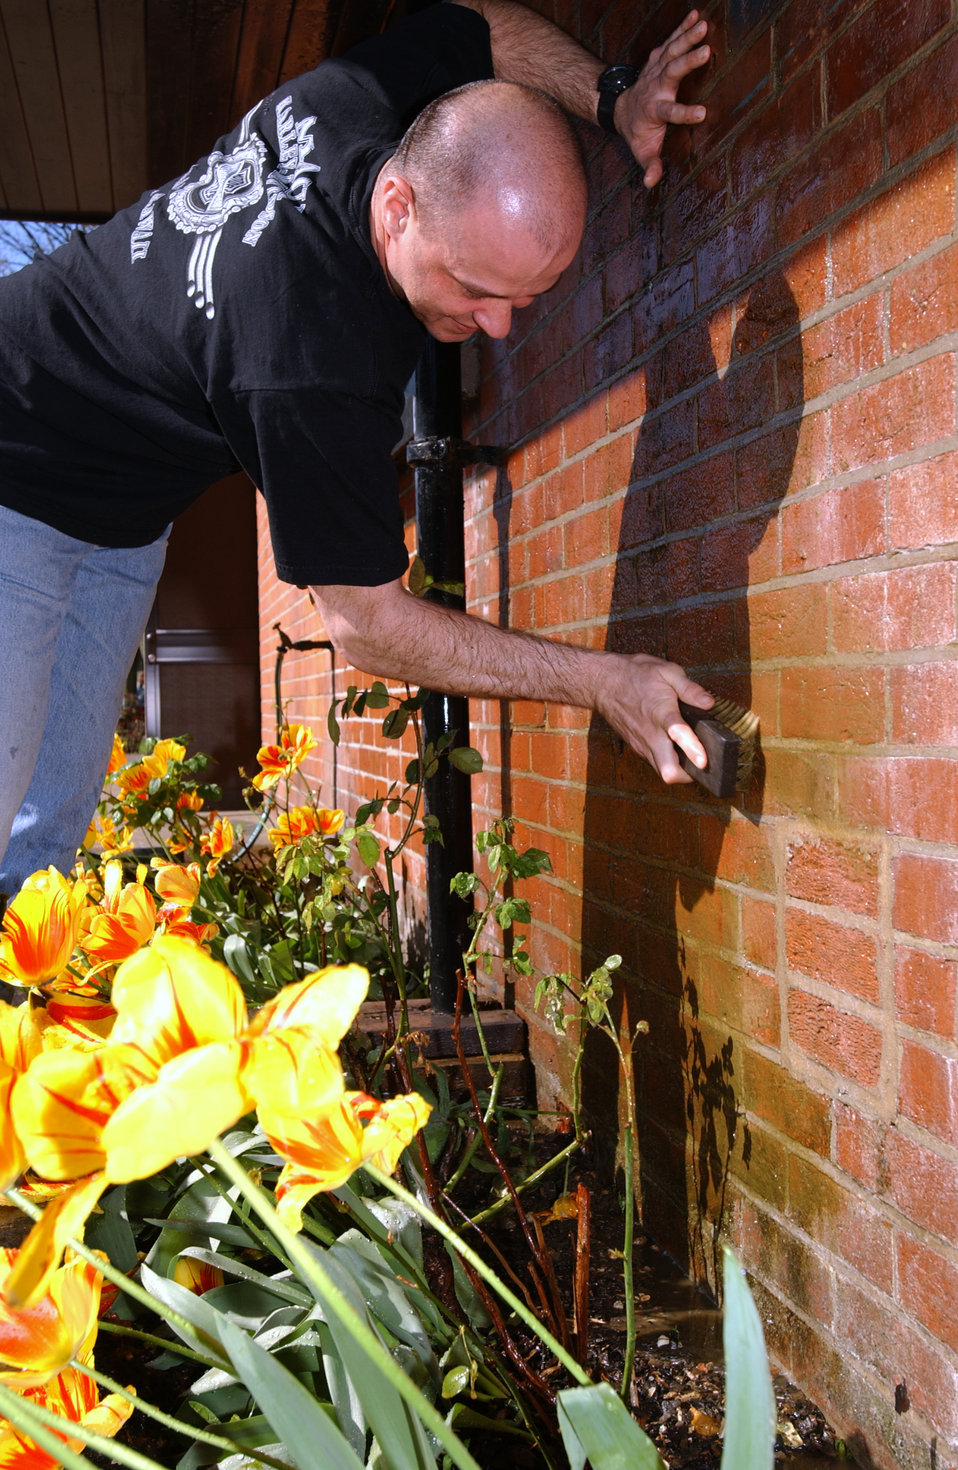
A good scrub

ROYAL AIR FORCE MILDENHALL, England -- Tech. Sgt. Todd Hartwick scrubs the moss, grime and mildew off the side of a building in an attempt to clean up its appearance here April 23 during a base-wide cleanup. Sergeant Hartwick is a member of the 100th Communications Squadron. Airmen and civilians helped spruce up the base during a cleanup named, the Mother of All Spring Clean-ups, as part of a U.S. Air Forces in Europe-wide Combat Proud initiative. The goal was to help bring pride to servicemembers stationed in the command.